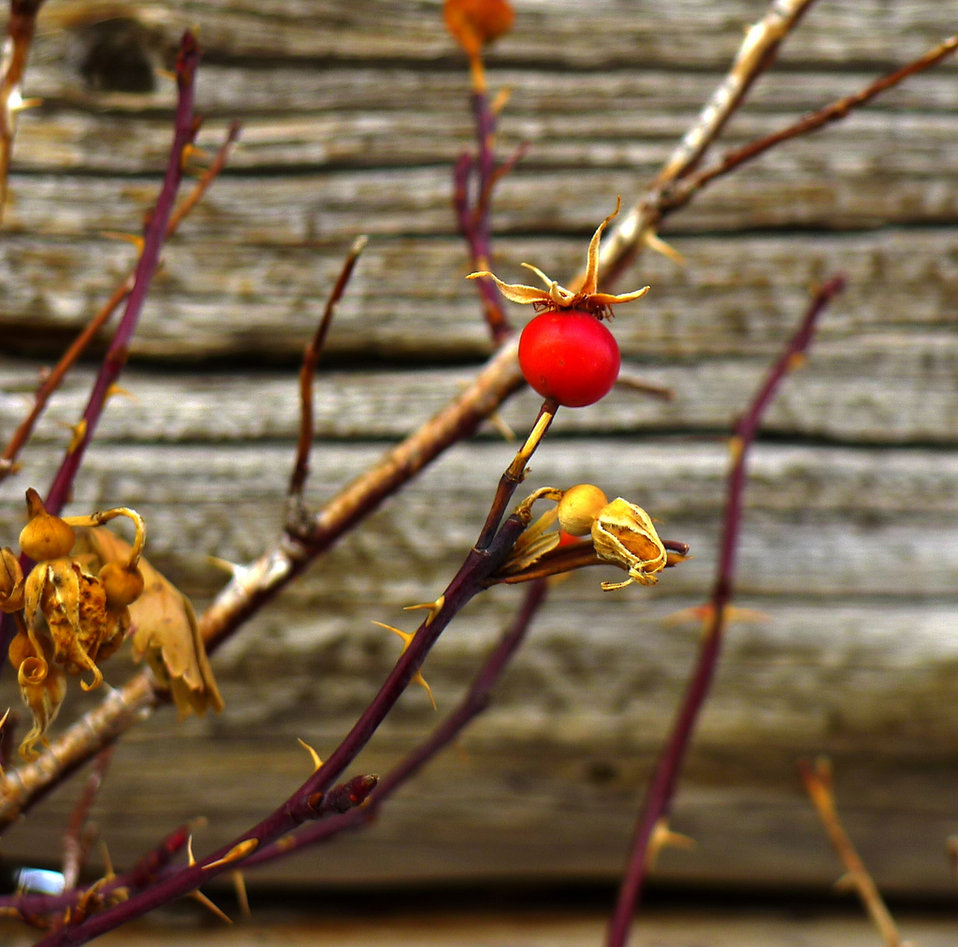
rosehips at an old homestead

Red Rock Lakes National Wildlife Refuge, MT